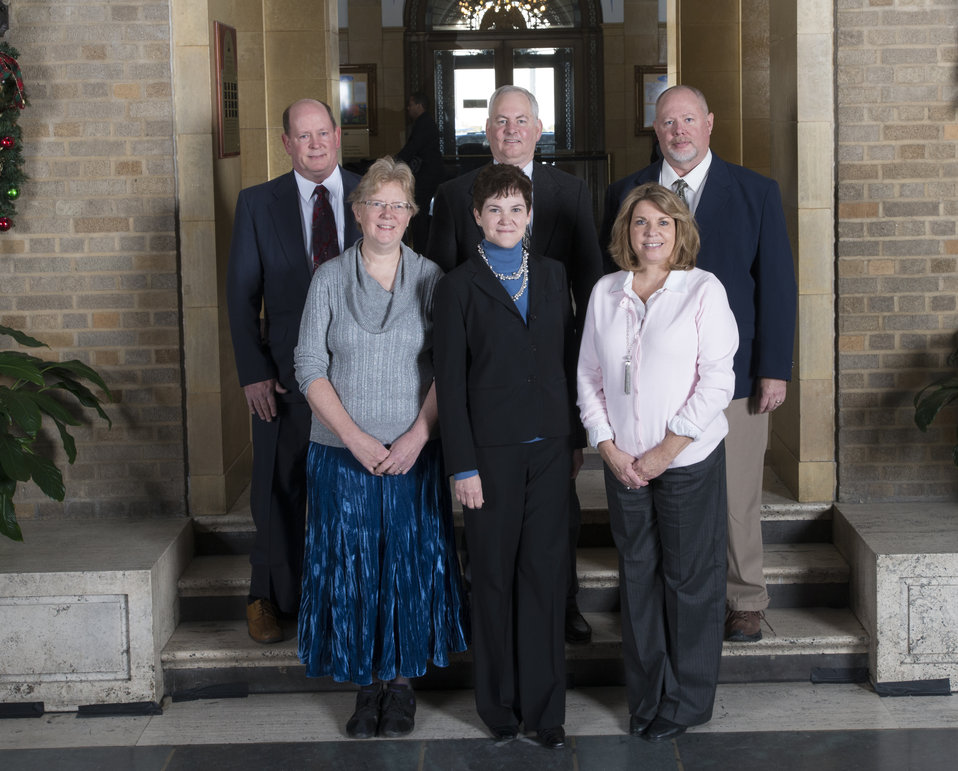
Agriculture Deputy Secretary Krysta Harden stands with the Microloan Team, Farm Service Agency on the patio at the U.S. Department of Agriculture (USDA) in Washington, D.C. on Wednesday, Dec. 11, 2013. The team received the Secretary’s Honor Award for developing the Microloan Program, which expands the availability of agricultural credit for small farm operators including beginning farmers, veterans, and disadvantaged producers.